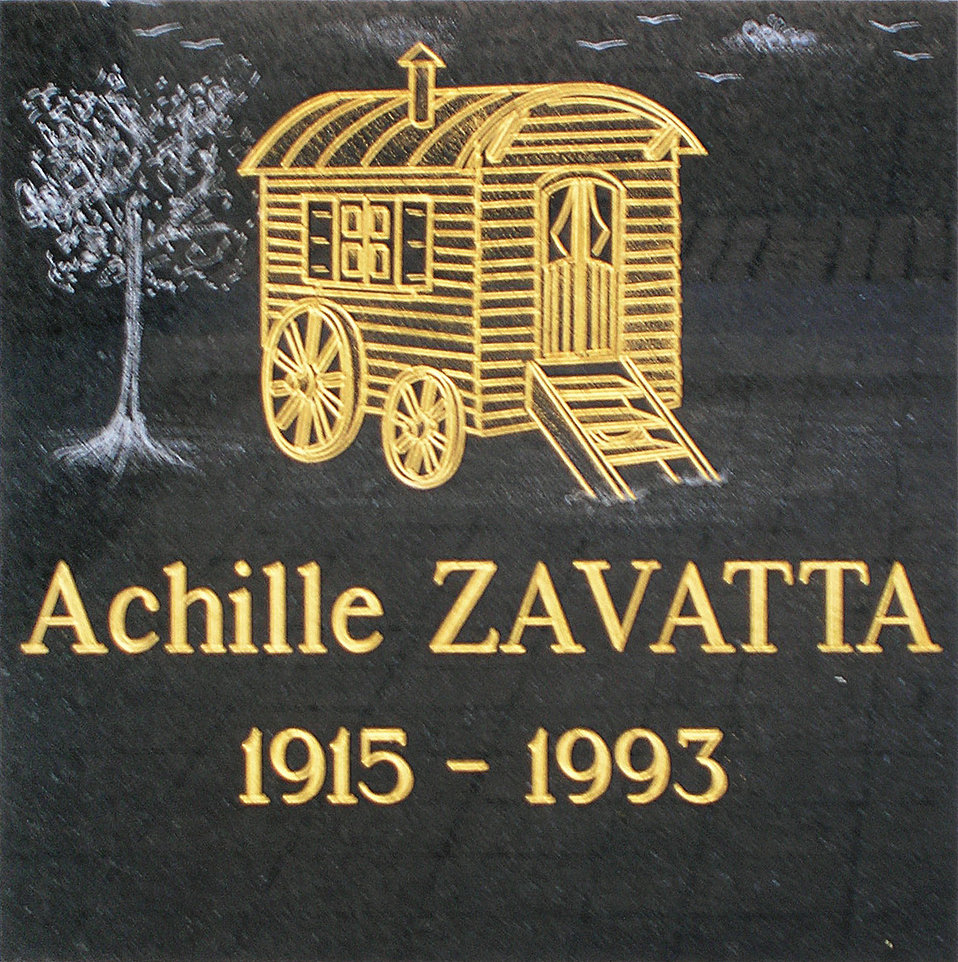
Commemorative plaque of Achille Zavatta in the columbarium of the P√®re-Lachaise Cemetery (Paris, France) Fran√ßais†: Plaque comm√©morative d'Achille Zavatta dans le columbarium du Cimeti√®re du P√®re-Lachaise (Paris, France)